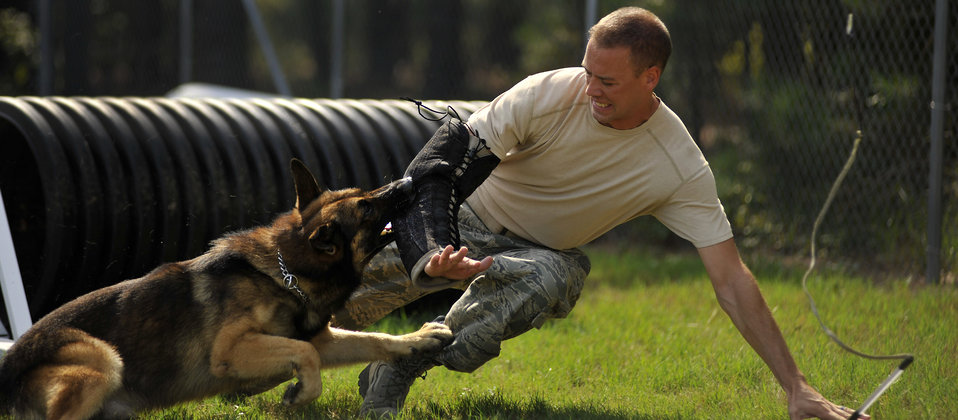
20th Security Forces Squadron Military Working Dog

Tech. Sgt. Randall Blair, a 20th Security Forces Squadron military working dog trainer, falls away from Markey during suspect pursuit training July 13, 2011, at Shaw Air Force Base, S.C. The 20th SFS MWD trainers work hard to train and prepare dogs, like Markey, for real world situations, such as drug raids, patrols and other specialized mission functions for the Department of Defense and government agencies.